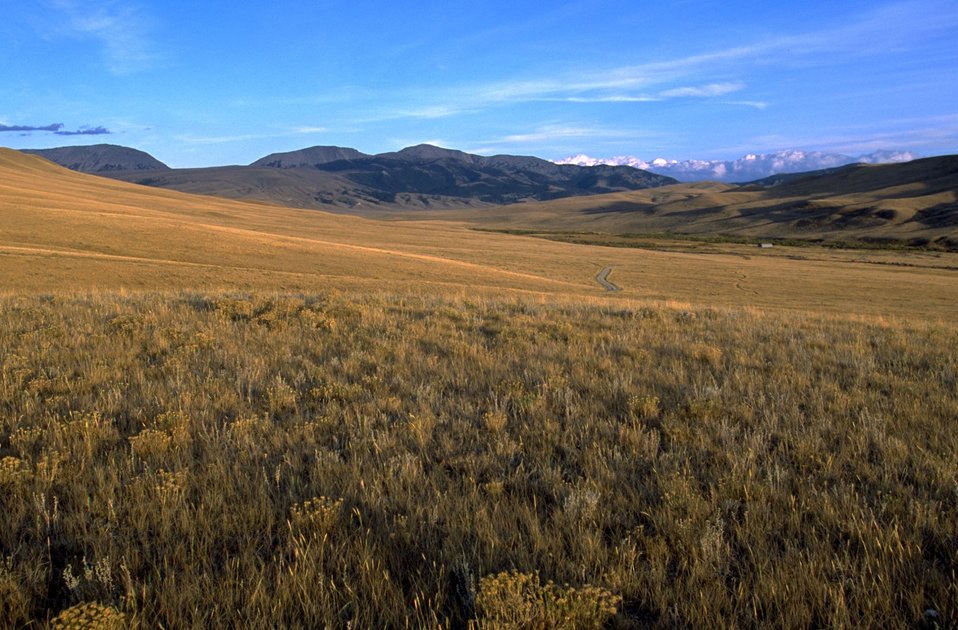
Grassy slope leading to creek